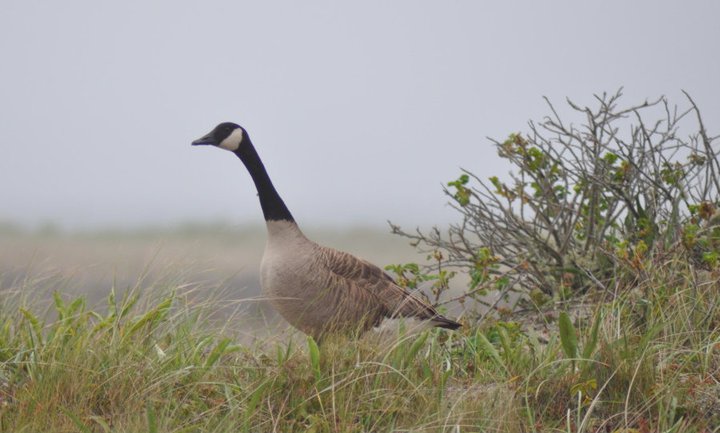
Canada goose at Nantucket National Wildlife Refuge, MA.